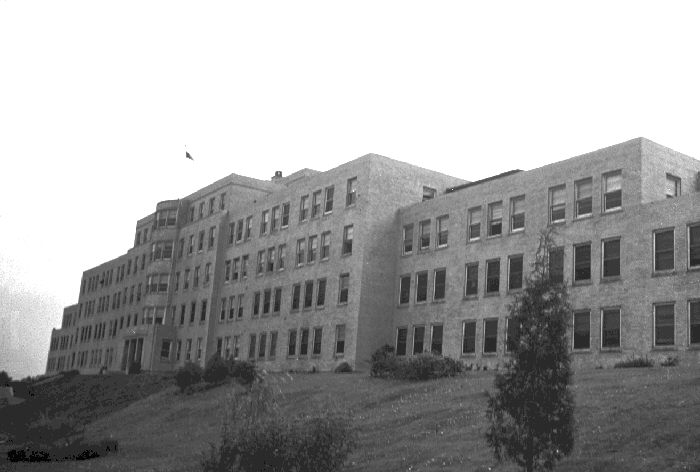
PHS Hospital, Tacoma, Washingotn